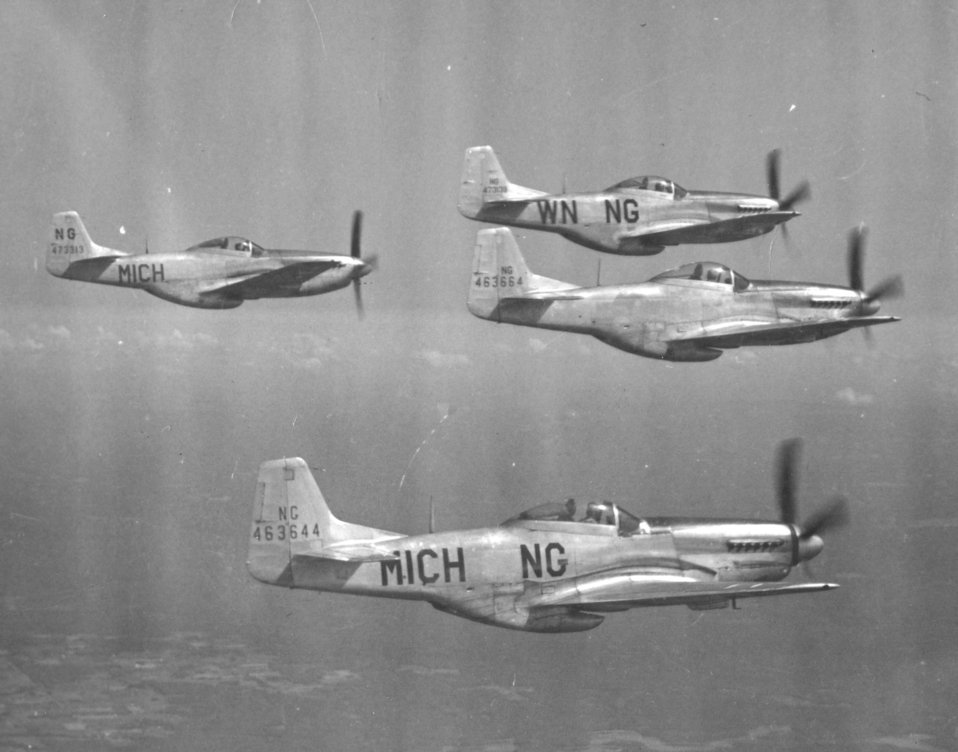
P-51D Mustangs

The P-51 Mustang began as the NA-73 in 1940 at Britain's request. The design showed promise and the Army Air Forces purchase of Allison-powered Mustangs began in 1941 primarily for photo reconnaissance and ground support use due to its limited high-altitude performance.